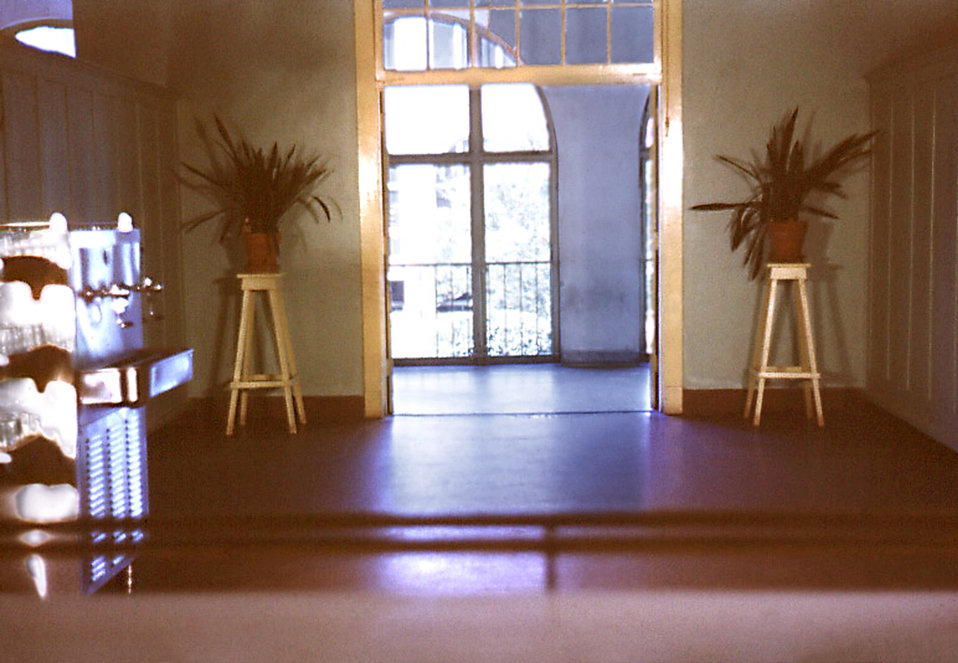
From an interior view, this historic image depicted the entrance to the Carville, Louisiana Leprosarium's cafeteria. It was through these doors that the hospital's 350 patients passed in order to partake in each of their meals, which included breakfast, lunch, and dinner. The hospital was a self-contained compound with its own storehouse, laundry, food-processing facilities, and patient treatment centers exemplified by this dental clinic.